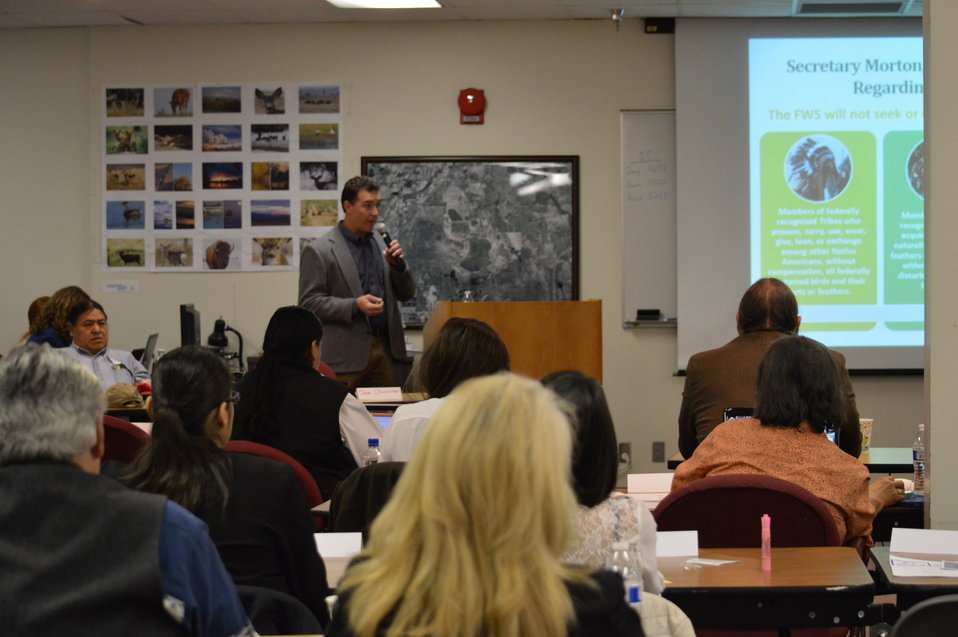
Eagle Summit III - Panel Discussion

Steve Oberholtzer starts the panel discussion at the Eagle Summit III in Denver, Colorado on March 20, 2014 at the Rocky Mountain Arsenal National Wildlife Refuge.